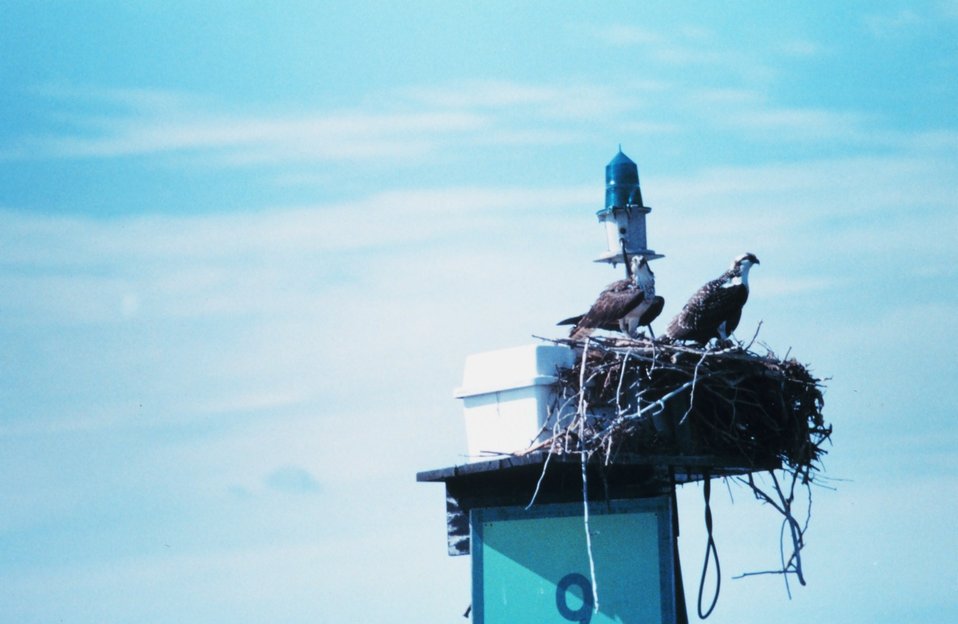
Osprey - Panion haliaetus